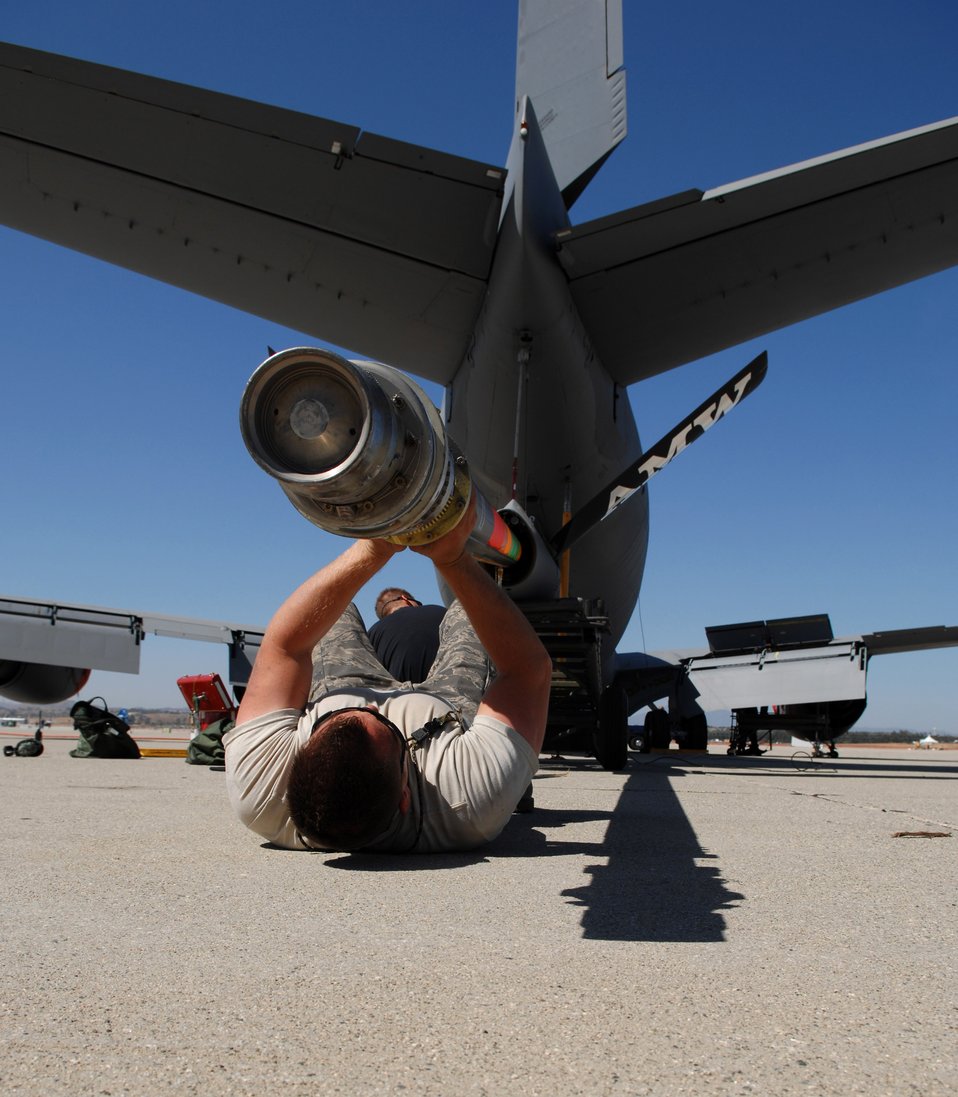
Looks good to me...

An Airman checks out the boom of a KC-135 Stratotanker refueler at March Air Reserve Base, Calif.